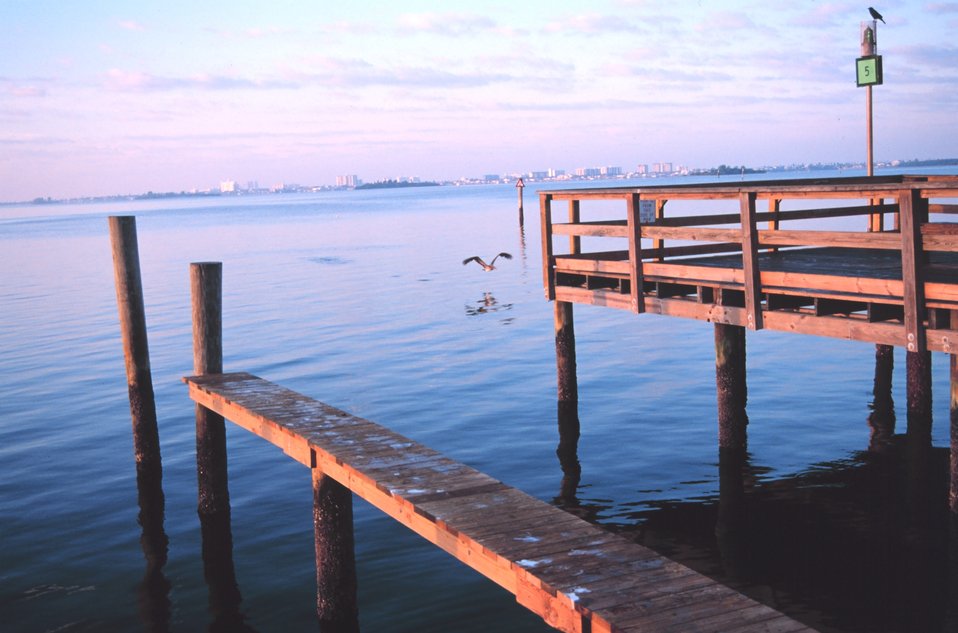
Clearwater, Florida, seen in the distance from a fishing marina